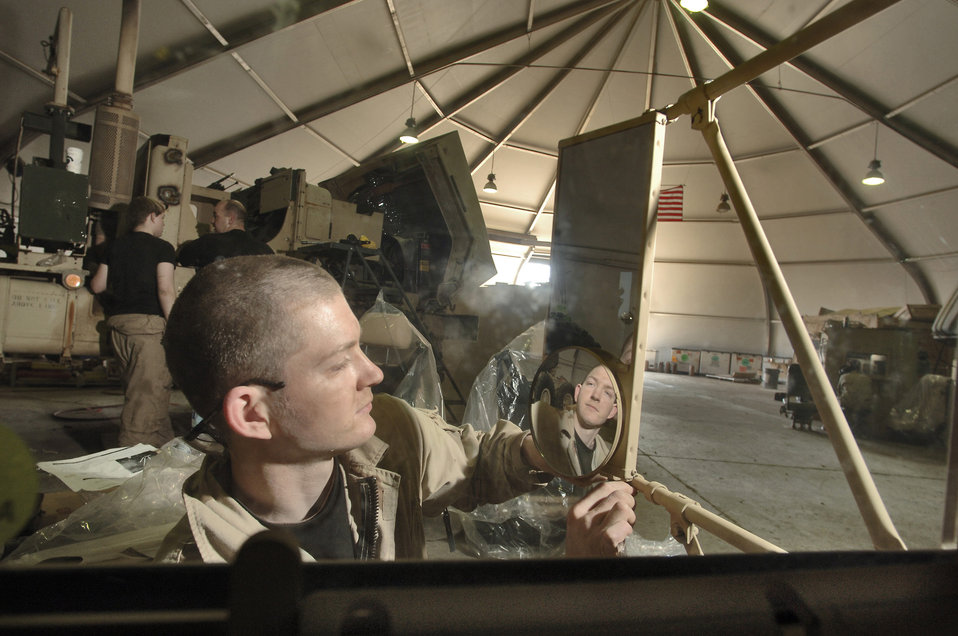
Up-armor for troops

BALAD AIR BASE, Iraq -- Staff Sgt. John See puts the final touches on a rearview mirror of an armored cab at the add-on armor shop here. The armor provides the driver and gunner protection against weapons fire and improvised explosive device explosions. Sergeant See is deployed from Seymour-Johnson Air Force Base, N.C.